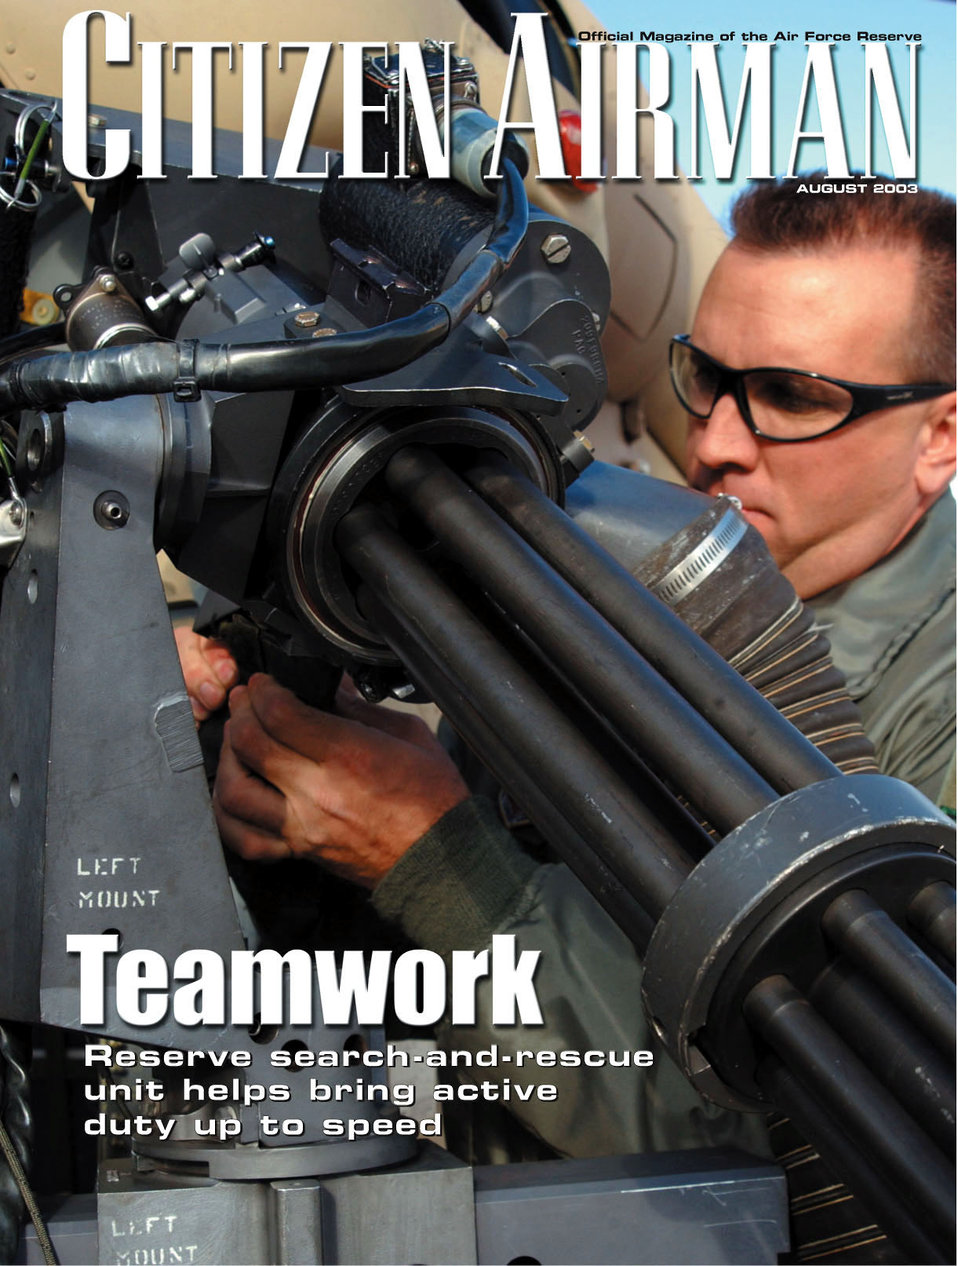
Citizen Airman

ROBINS AIR FORCE BASE, Ga. -- The August issue of Citizen Airman magazine is now available.